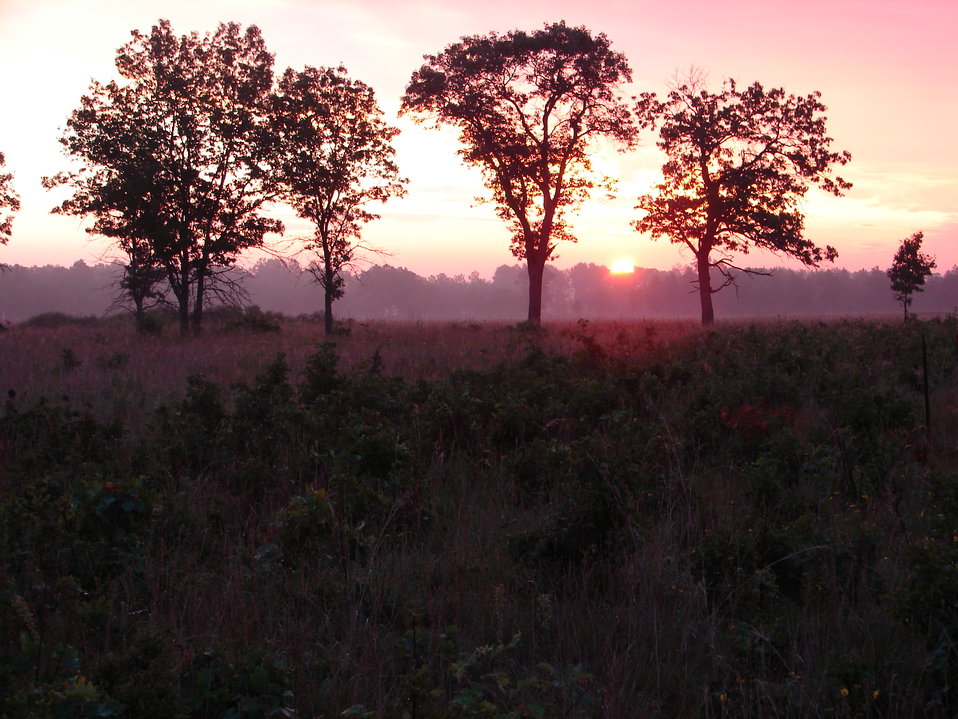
Necedah Purple Savanna

The setting sun turns the savanna purple at Necedah National Wildlife Refuge.